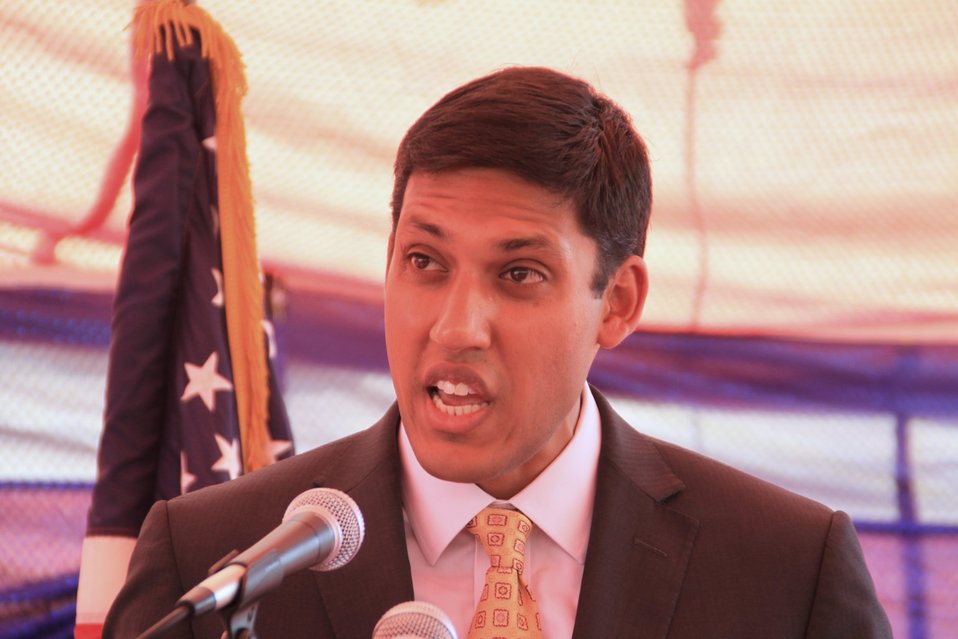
Badam Bagh Farm